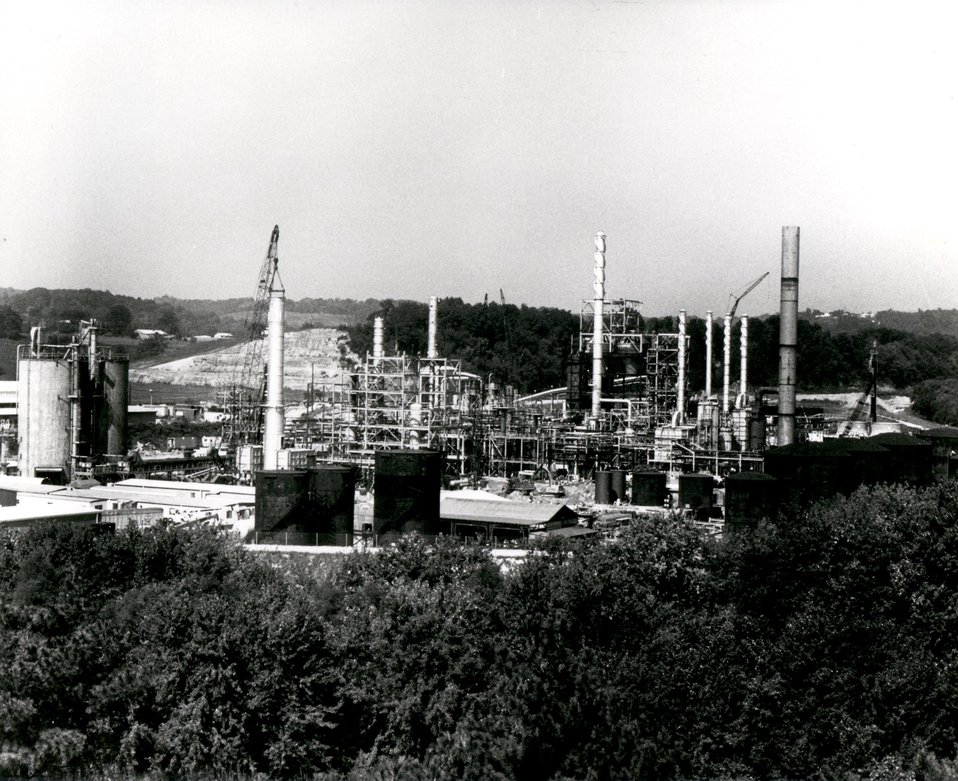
An overview of the H-Coal Pilot Plant. Circa 1979.